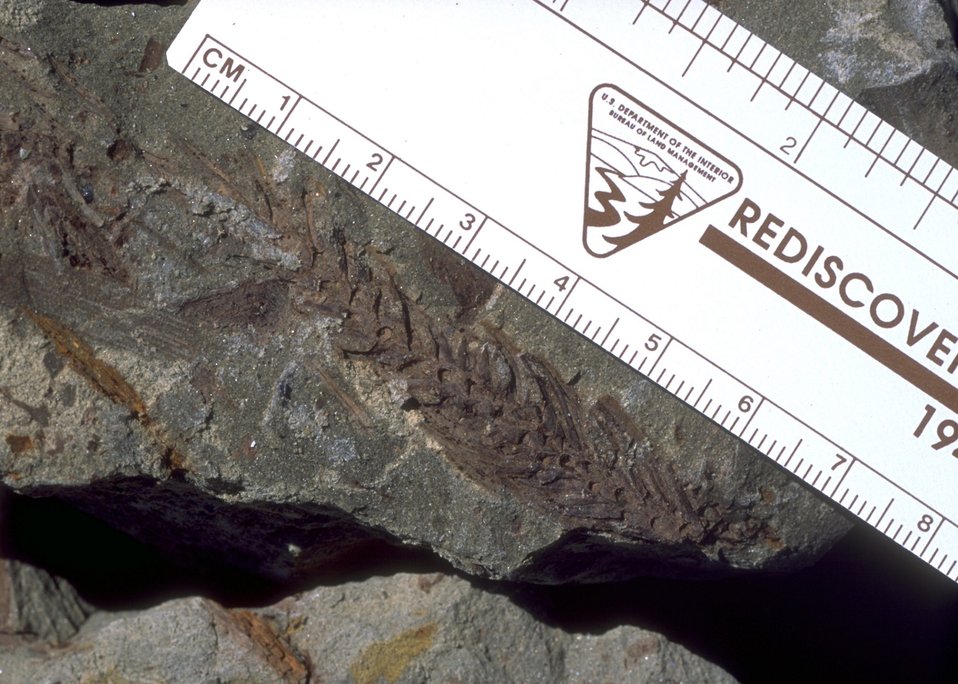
Close up of fossil vegetation, Cedar Ridge Paleo area, Worland Field Office.